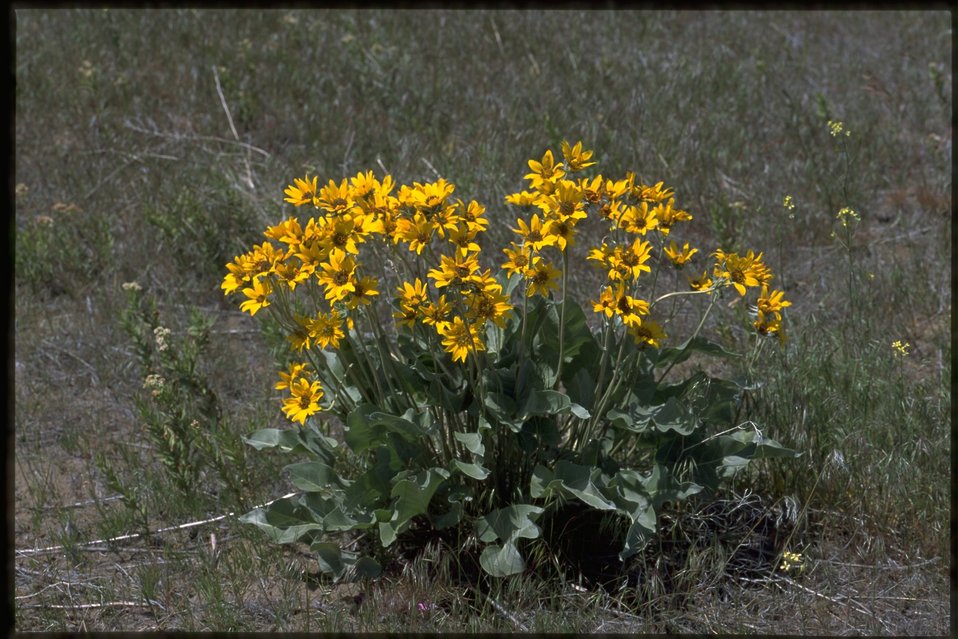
Farshot of Asteraceae.